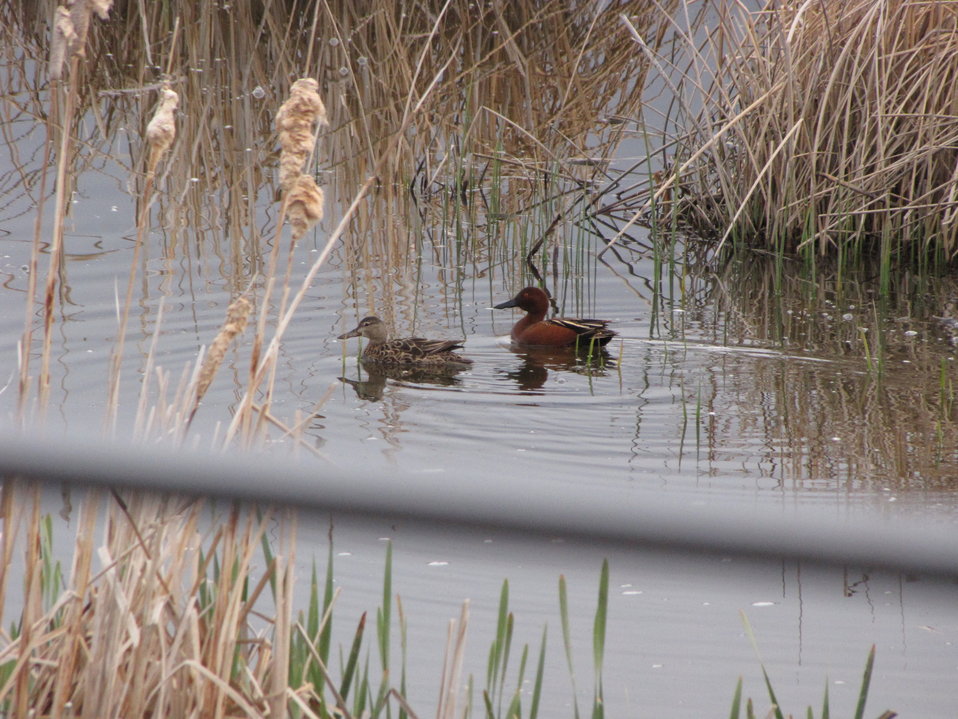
Pair of Cinnamon Teal

An elegant pair of Cinnamon teal - named for the male's rufous plumage - visits the wetlands in front of the Refuge Wildlife Education Center.